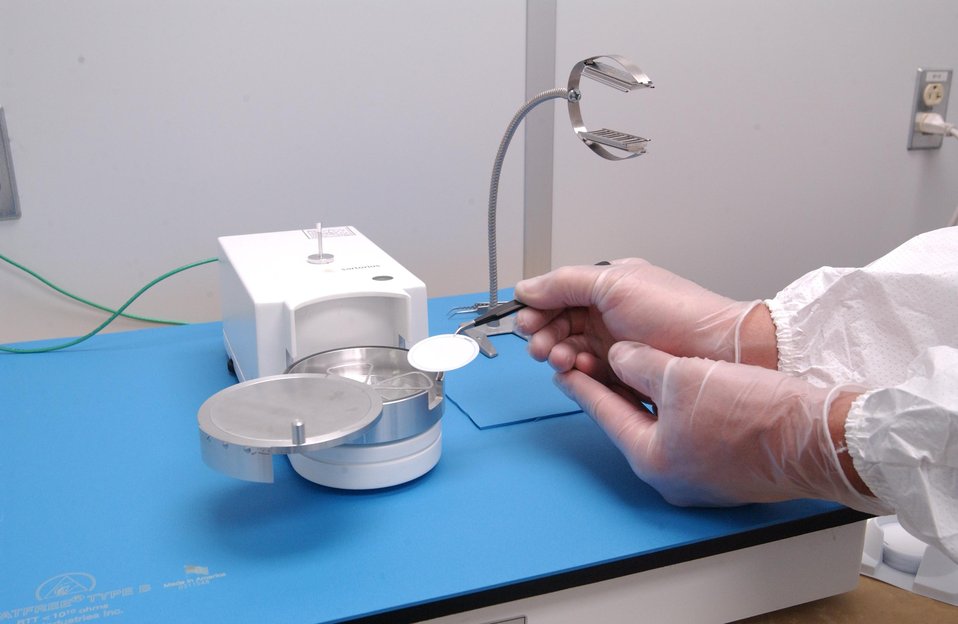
A RESEARCHER IN NATIONAL RENEWABLE ENERGY LABORATORY'S RENEWABLE FUELS AND LUBRICANTS LABORATORY (REFUEL) PREPARES A FILTER FOR PARTICULATE MASS MEASUREMENT IN THE LAB'S EMISSIONS MEASUREMENT FACILITY.

THE REFUEL LABORATORY IS THE FIRST LAB IN THE U.S. DEDICATED TO RESEARCHING AND DEVELOPING RENEWABLE AND SYNTHETIC FUELS AND LUBRICANTS FOR HEAVY-DUTY TRANSPORTATION APPLICATIONS. IT IS ALSO THE ONLY LAB TO EVALUATE THE EFFECTS OF OPERATING HEAVY-DUTY VEHICLES AT HIGH ALTITUDE.